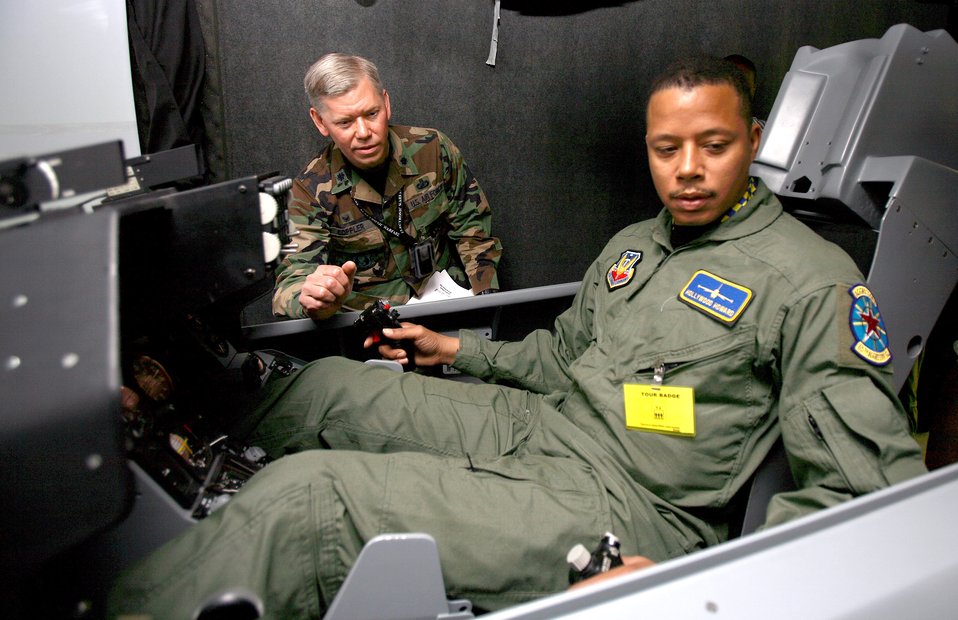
Edwards team stars in 'Ironman' superhero movie

Lt. Col. David Coppler instructs actor Terrence Howard on the controls of an F-16 Fighting Falcon simulator to help prepare him for his role in the movie